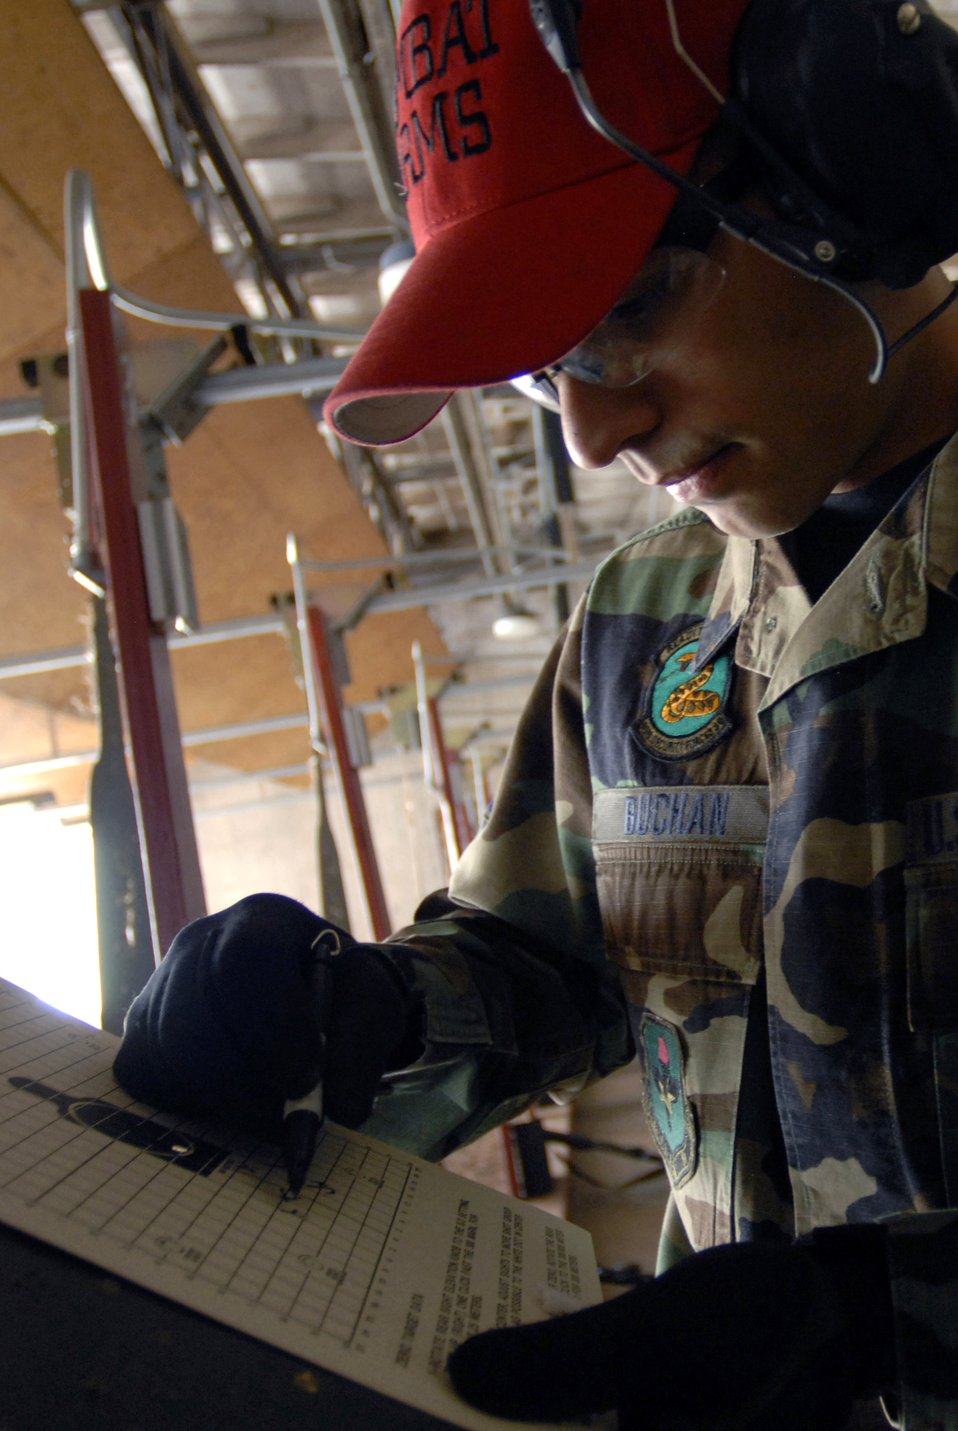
The line is ready, FIRE!

Staff Sgt. Matthew Buchan designates missed shots during a tactical rifle qualification course April 12 at Luke Air Force Base, Ariz. Sergeant Buchan is a combat arms instructor for the 56th Security Forces Squadron. Airmen must be qualified in their primary weapon prior to deploying in support of the war on terrorism. There are more than 28,000 Airmen deployed around the world today.